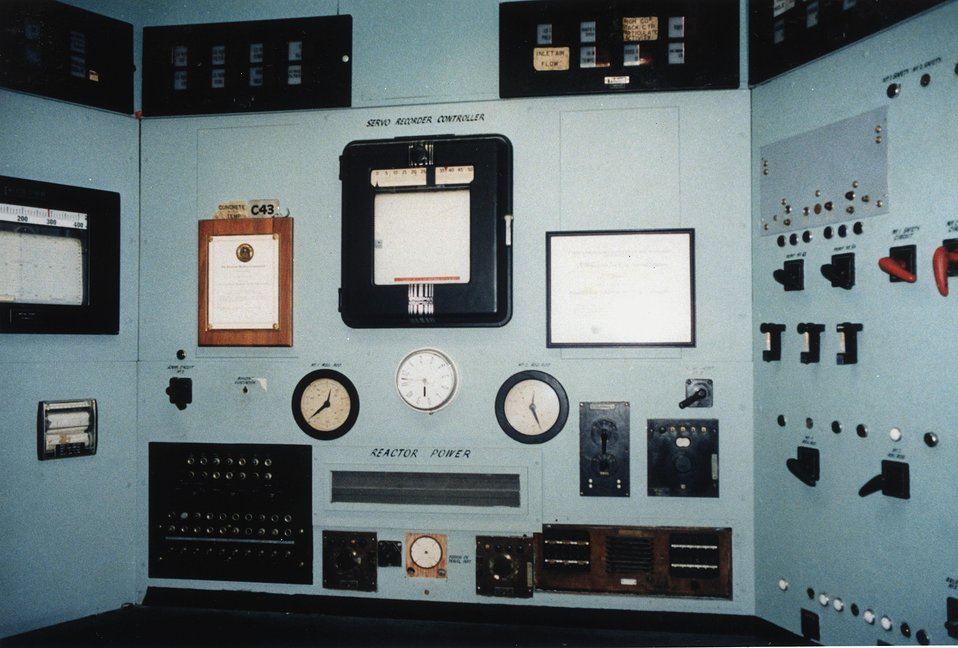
Graphite Reactor controls.